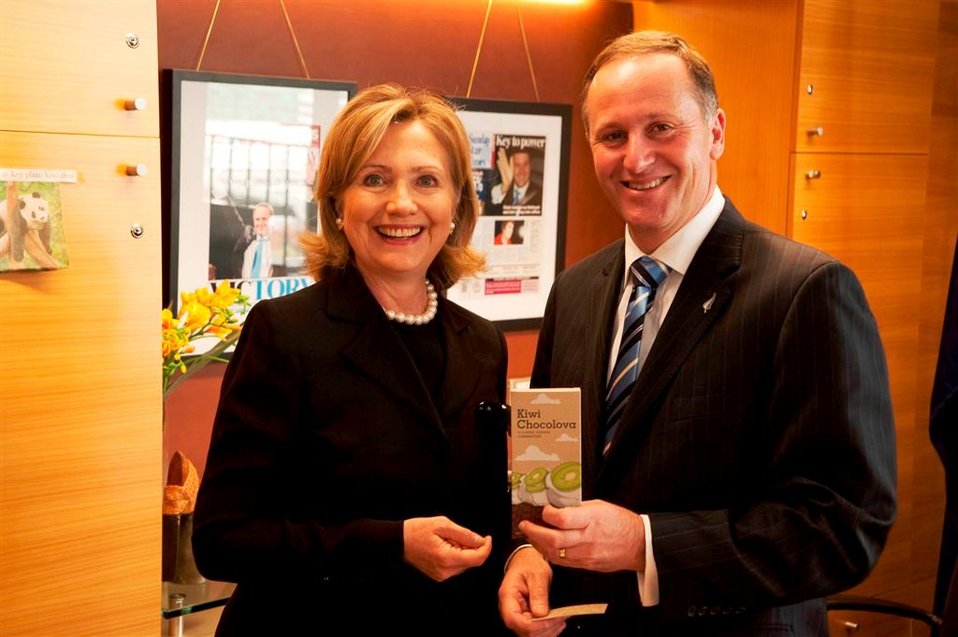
New Zealand Prime Minister Key Displays a Kiwi Chocolava Bar Beside Secretary Clinton

New Zealand Prime Minister John Key displays a Kiwi Chocolava bar beside U.S. Secretary of State Hillary Rodham Clinton in the Prime Minister's office in Wellington, New Zealand, on November 4, 2010.